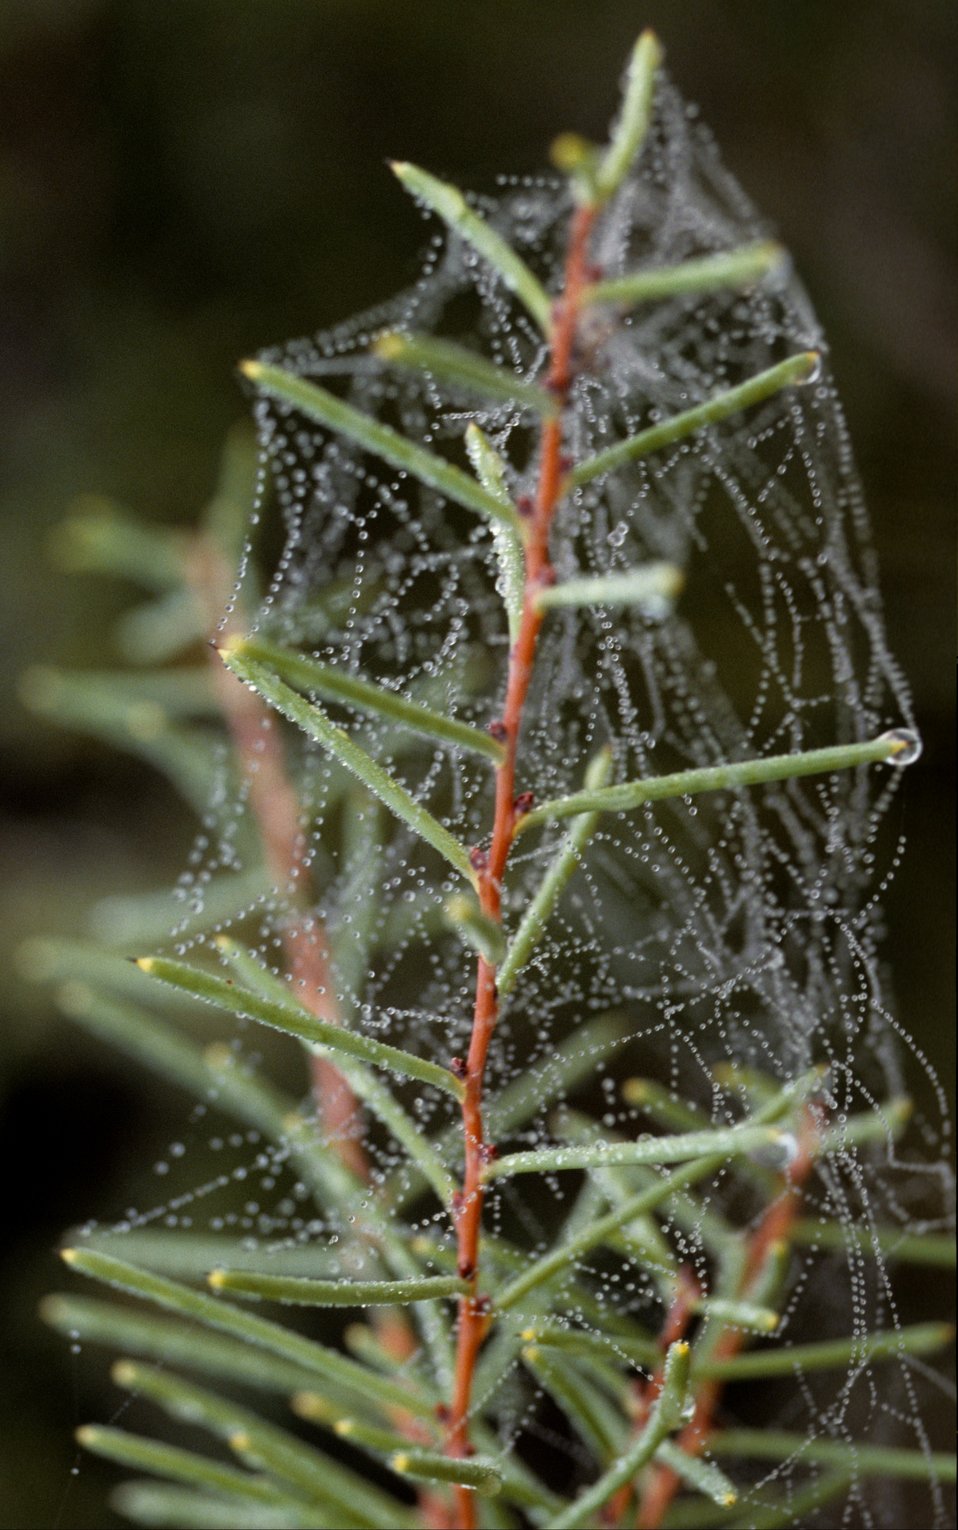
A dew-covered spider web.